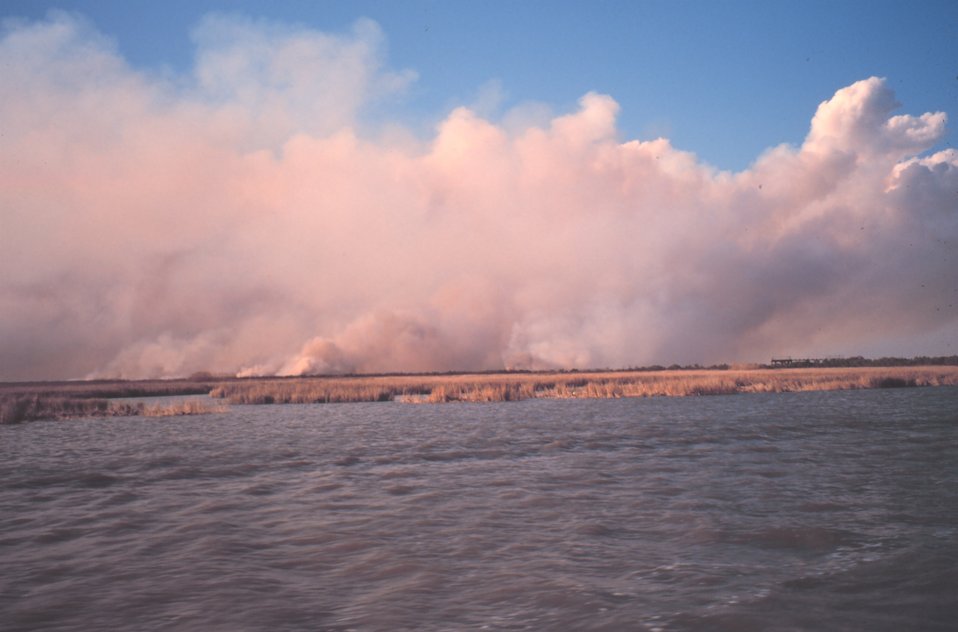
Controlled burn to enhance following year's growth of marsh vegetation